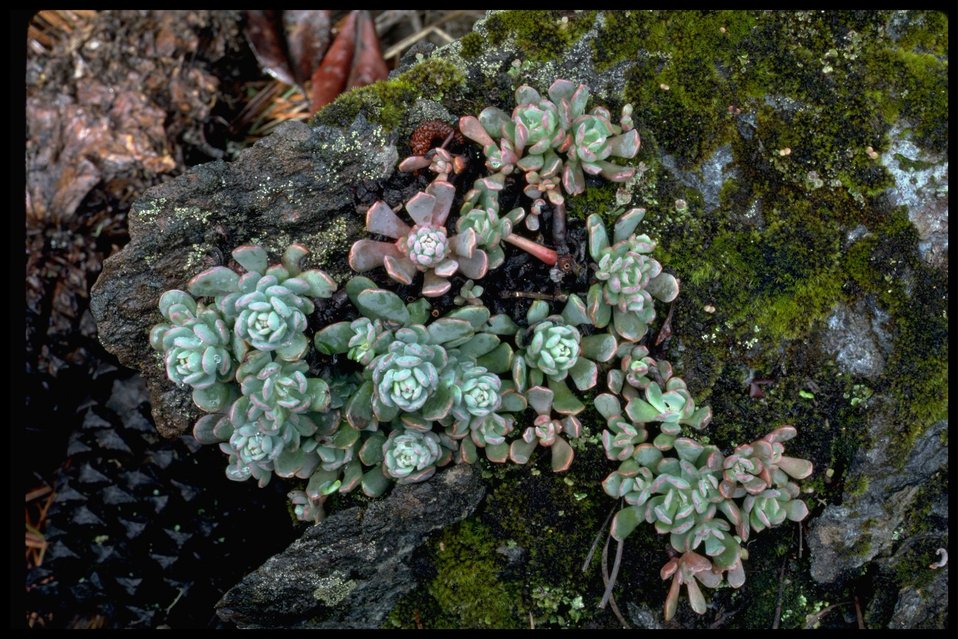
Farshot of lax stonecrop (Sedum laxum).